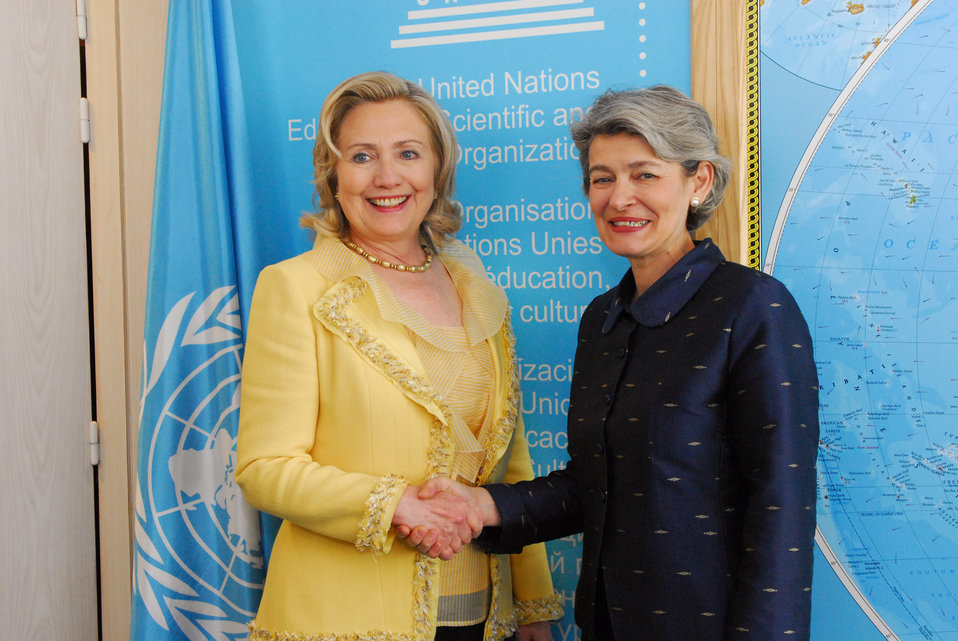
Secretary Clinton Meets With UNESCO Director-General Irina Bokova

U.S. Secretary of State Hillary Rodham Clinton meets with UNESCO Director-General Irina Bokova, at UNESCO in Paris, France, on May 26, 2011.